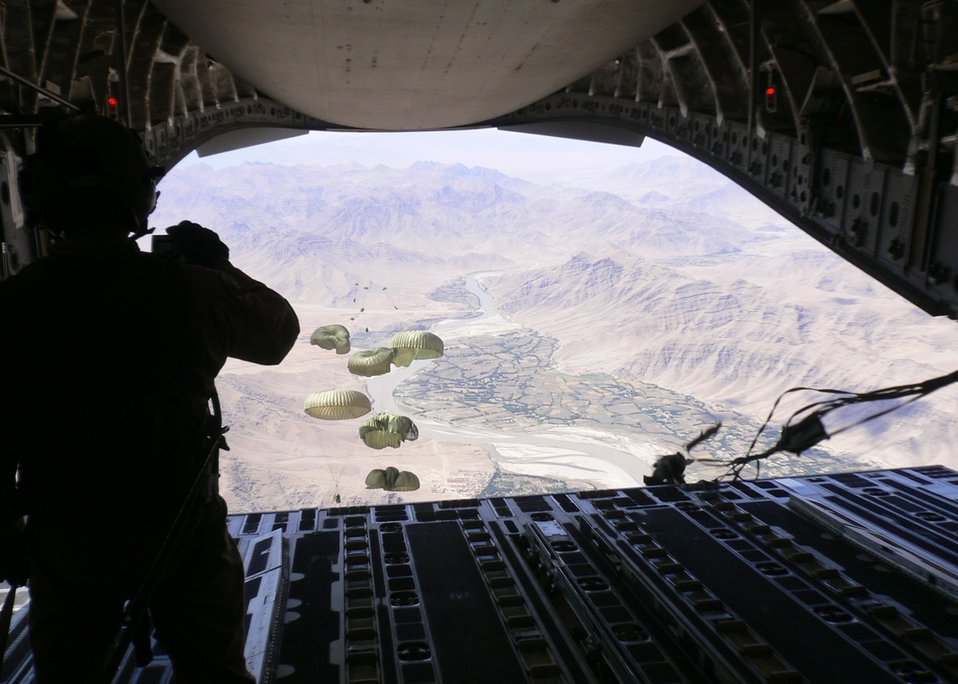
C-17 employs 'screamer' in combat airdrop

Staff Sgt. Derek Howard watches six container delivery system supply bundles as they parachute from a C-17 Globemaster III to the ground over Afghanistan May 24. The C-17 employed the Joint Precision Airdrop System in combination with the Improved Container Delivery System to increase accuracy of airdrops. The ICDS airdrops provide resupply to forward operating locations in Afghanistan supporting Operation Enduring Freedom. Sergeant Howard is from the 816th Expeditionary Airlift Squadron.